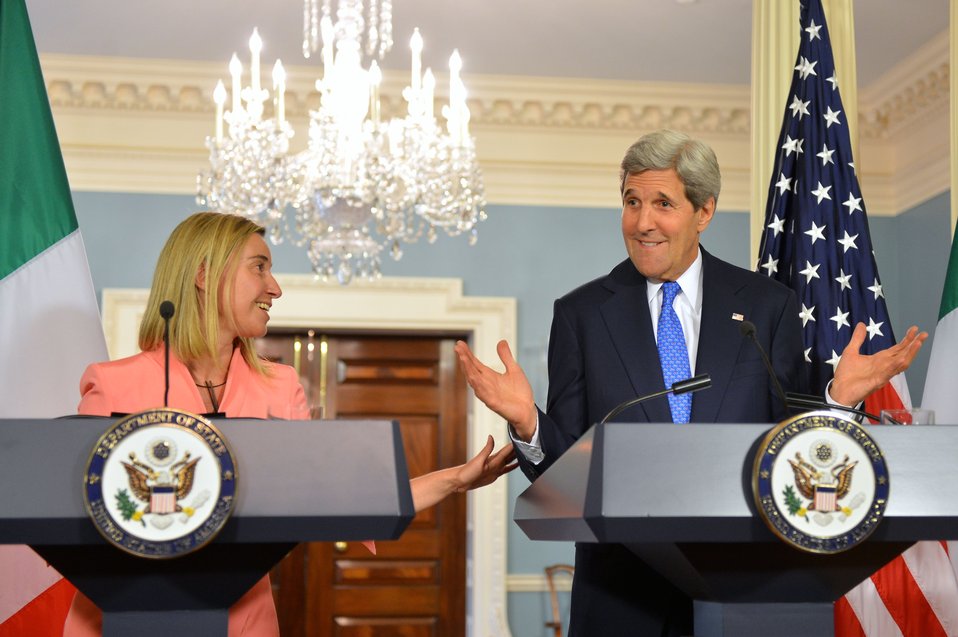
Secretary Kerry and Italian Foreign Minister Mogherini Hold a Joint News Conference

U.S. Secretary of State and Italian Foreign Minister Federica Mogherini hold a joint news conference after their bilateral meeting at the U.S. Department of State in Washington, D.C., on May 13, 2014.